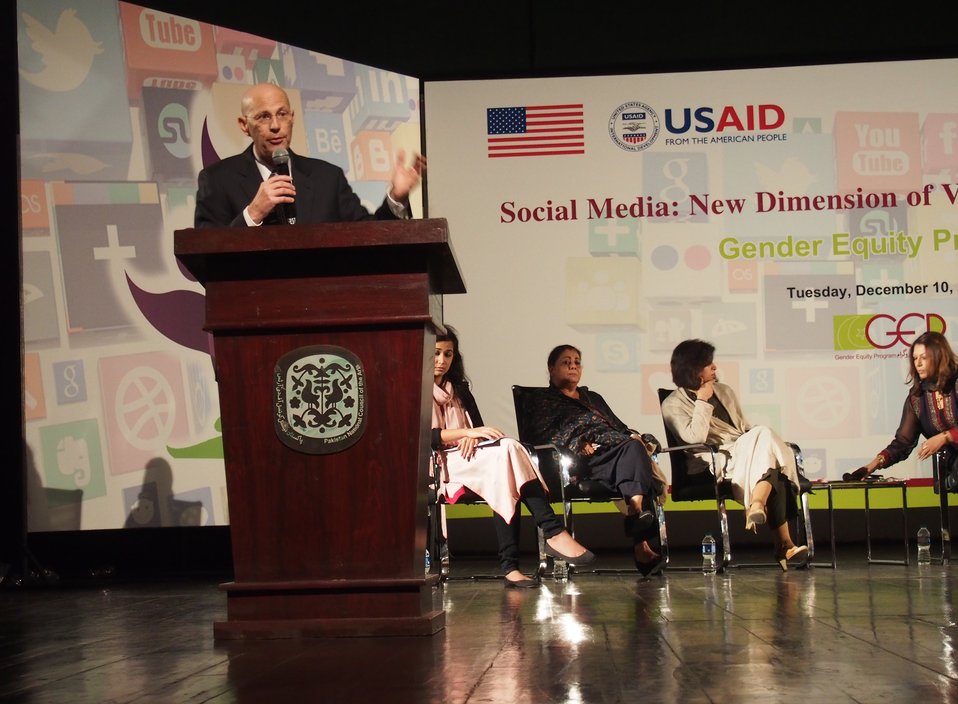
Social Media Event

Participants at a United States funded panel discussion on cyber-bullying today condemned the rising trend of cyber-crime against women and said that large number of Pakistani girls and women are victims of this kind of violence, which mainly includes cyber-stalking, blackmailing and pornography. They said that due to existing social norms, women are more vulnerable to the negative aspects of information technology.

The panel discussion, titled “Social Media: New Dimension of Violence against Women,” was part of the 16 Days of Activism campaign about violence against women. It took place at the Pakistan National Council of Arts and was sponsored by Aurat Foundation’s Gender Equity Program (GEP), which is funded by the United States government through U.S. Agency for International Development (USAID).